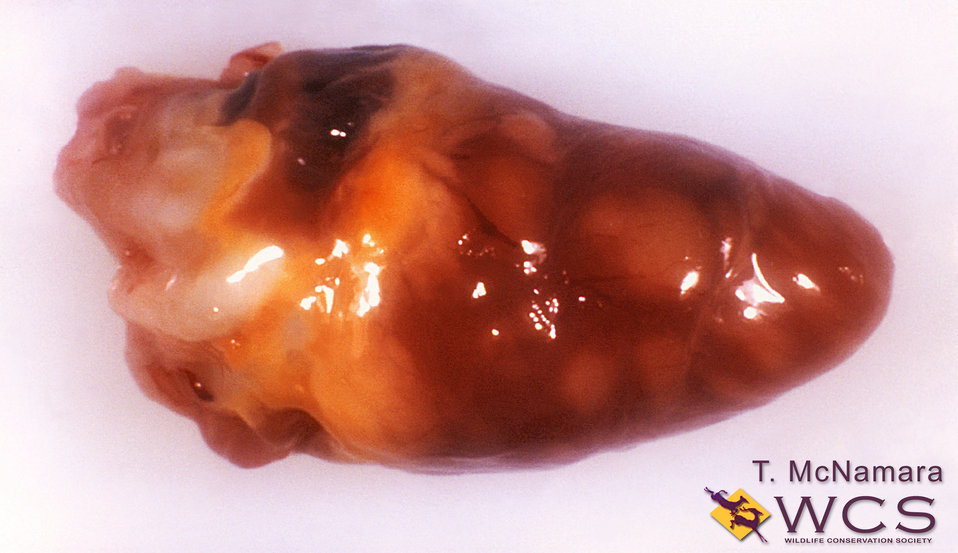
Performed by Tracey McNamara, DVM, Dipl. ACVP, formerly a veterinary pathologist at the Wildlife Conservation Society (located at the Bronx Zoo), a 1999 autopsy of a New York State crow, revealed symptoms including the myocarditis seen here, which lead to a diagnosis of West Nile virus.